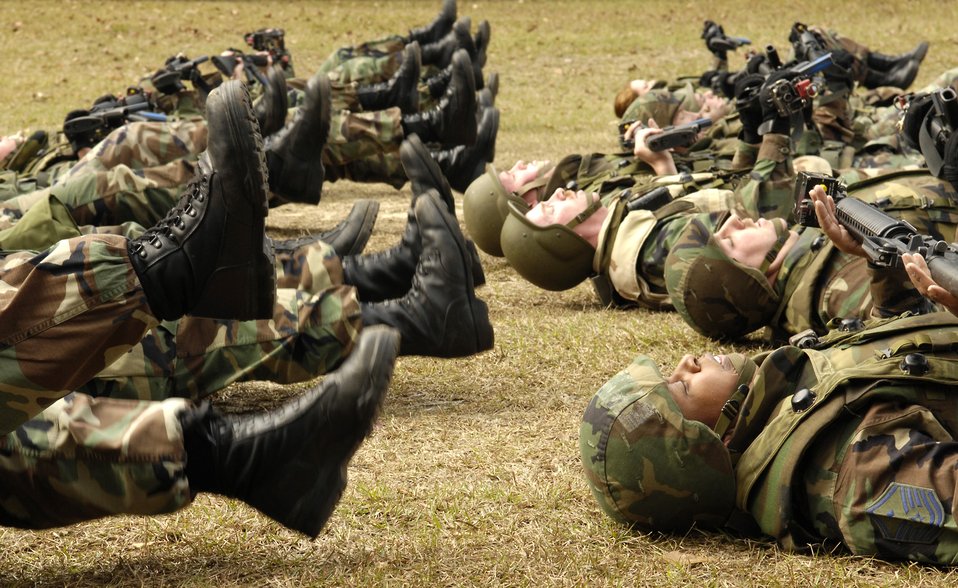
Fluttering away

Airmen flutter kick as they hold their weapons up in the air during the Expeditionary Combat Skills Training Dec. 7 at Charleston Air Force Base, S.C. The course helps prepare Airmen for future deployments.